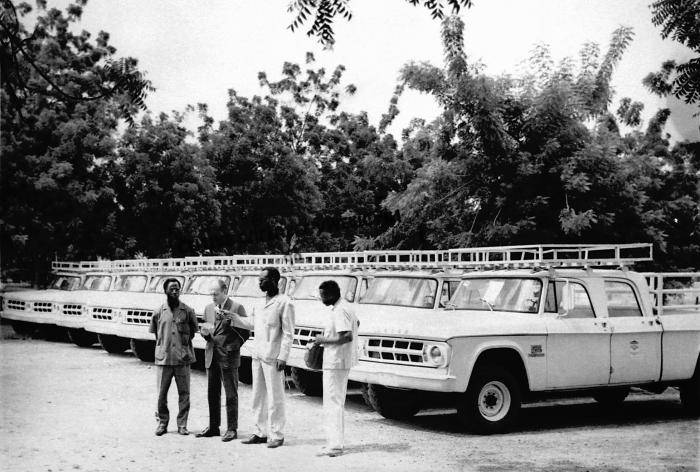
During worldwide smallpox eradication efforts, this 1969 photograph was captured at a 'Truck Ceremony', which was a way of introducing a fleet of transportation vehicles to the Upper Volta community of Burkina Faso.